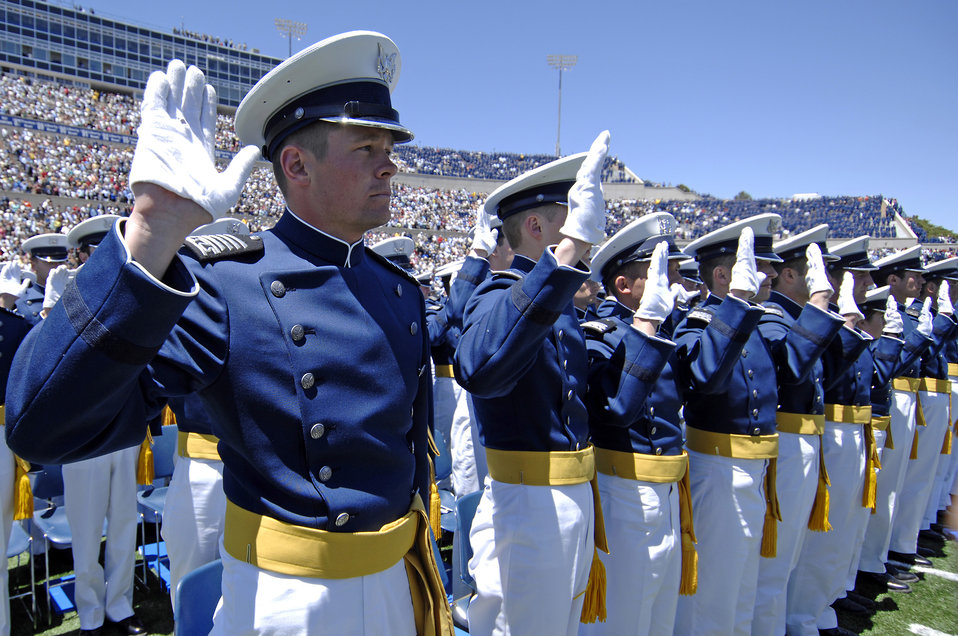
2009 U.S. Air Force Academy graduation

Cadet Bradley Dewees recites the oath of office along with his fellow U.S. Air Force Academy cadets on his way to becoming a second lieutenant during the graduation ceremony May 27 in Falcon Stadium. Lieutenant Dewees was the top graduate in the Class of 2009.